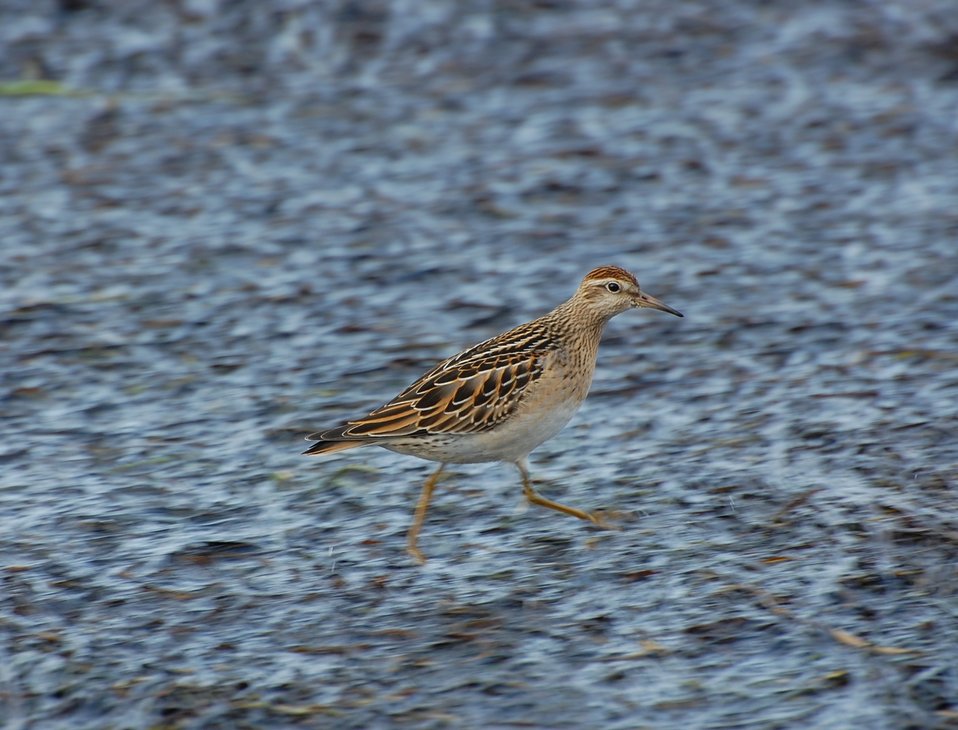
Juvenile Sharp-tailed Sandpiper

Izembek Lagoon, Izembek National Wildlife Refuge
Photo by Kristine Sowl,
USFWS, Public Domain